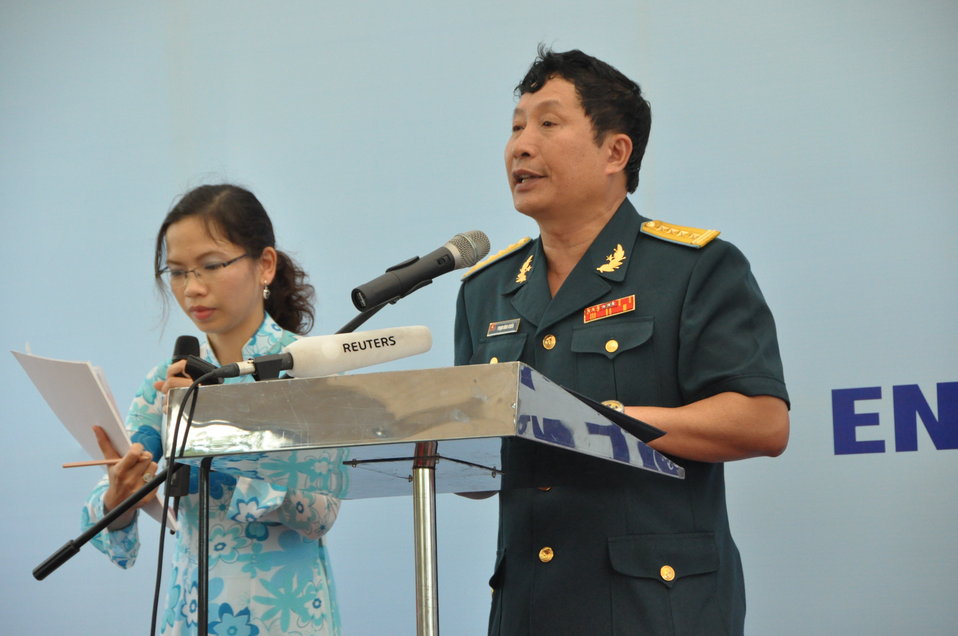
Col. Pham Dinh Chien, Head of Science, Technology and Environment Division - Air Defense Air Force Command, MND - speaks at the Environmental Remediation of Dioxin Contamination at Danang Airport Project Launch

August 9, 2012